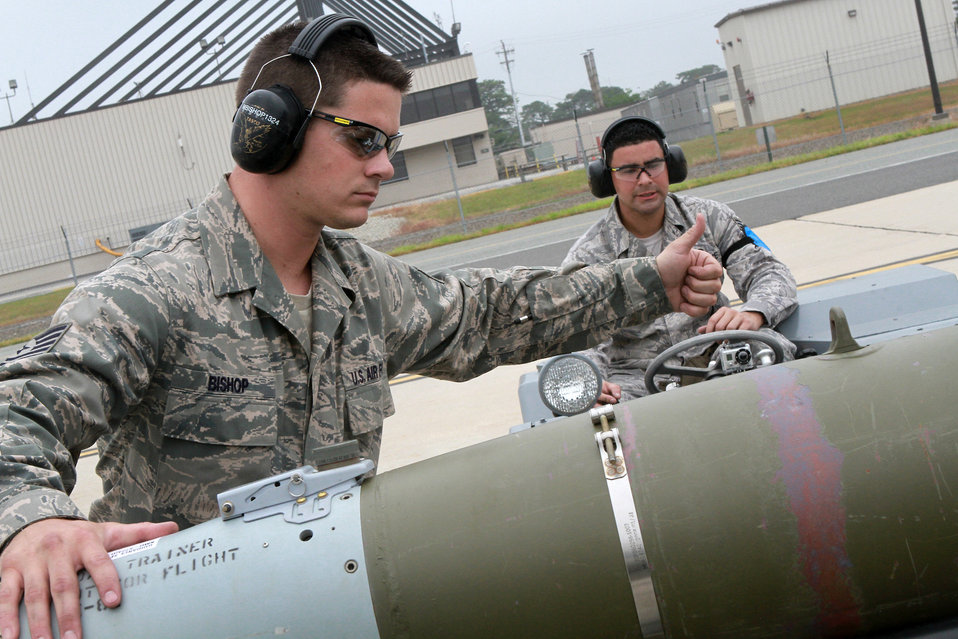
Weapons-loader competition

Tech. Sgt. Michael Bishop (left) directs Senior Airman Daniel Gonzalez as he backs up his lift truck June 12, 2011, during an annual load-crew competition at Egg Harbor Township, N.J. Sergeant Bishop and Airman Gonzales are weapons loaders assigned to the New Jersey Air National Guard's 177th Fighter Wing.